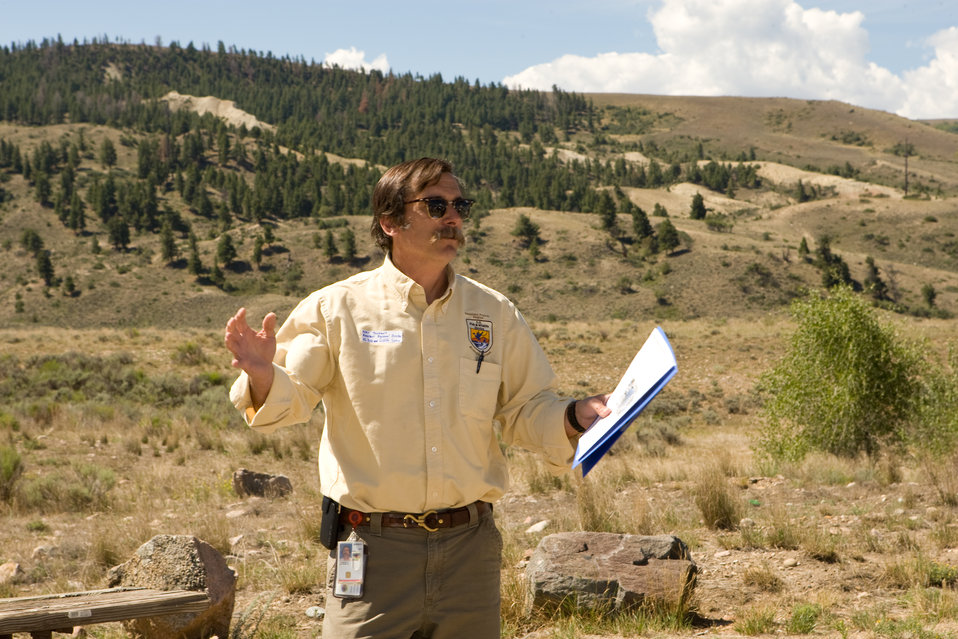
Colorado Rare Plant Conservation Initiative

The Colorado Rare Plant Conservation Initiative (RPCI) is a partnership of 23 statewide and regional agencies, private organizations, and academic institutions working to conserve 121 rare plants in Colorado. As part of these efforts the group developed the Colorado Rare Plant Conservation Strategy, developed Best Management Practices to reduce energy development impacts, addressed climate change, and developed focused strategies for the conservation of individual species at eight priority landscapes. The group has also worked to coordinate volunteer efforts for plant conservation across the state.